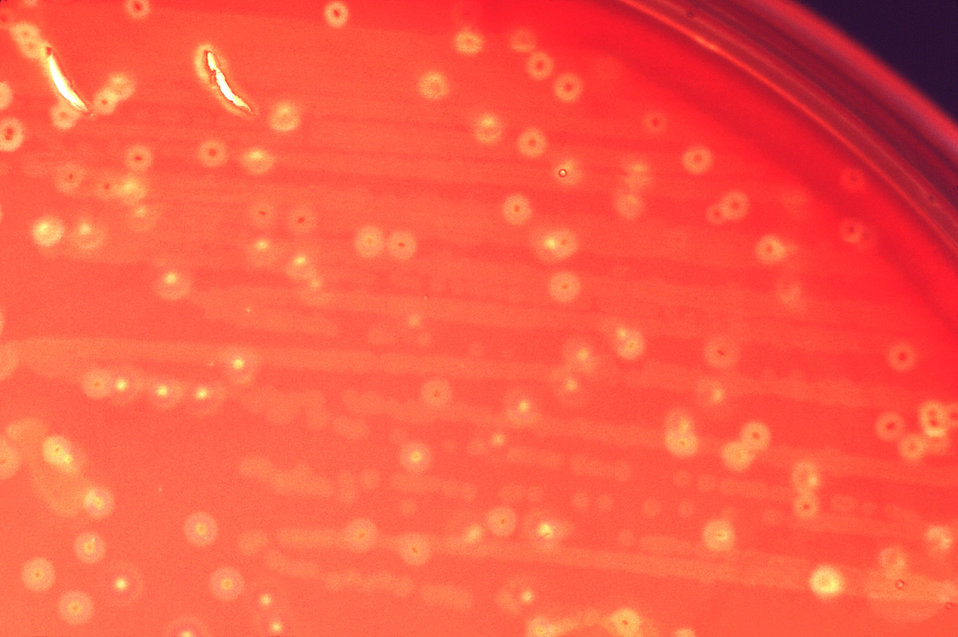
This 1977 image depicts a Petri dish filled with trypticase soy agar medium containing 5% defibrinated sheep's blood, i.e., blood agar plate (BAP). After having been inoculated with alpha-hemolytic Streptococcus anginosus bacteria, i.e., a member of the Gram-positive viridans group of streptococci (VGS), the BAP was incubated in a carbon dioxide enriched atmosphere at 35oC for 24 hours. The culture grew numbers of surface bacterial colonies. The characteristic color changes, i.e., a hazy, faded, indistinct region surrounding each colony in which some of the red blood cells (RBCs) were destroyed in the blood agar medium, or "hemolyzed", indicated that these bacteria were indeed alpha-hemolytic in nature.It is the incomplete nature of the hemolytic reaction adjacent to the colonies, which spares numbers of RBCs in the blood agar medium, that is of qualitative importance when distinguishing alpha from beta-hemolysis. No magnification was used here.